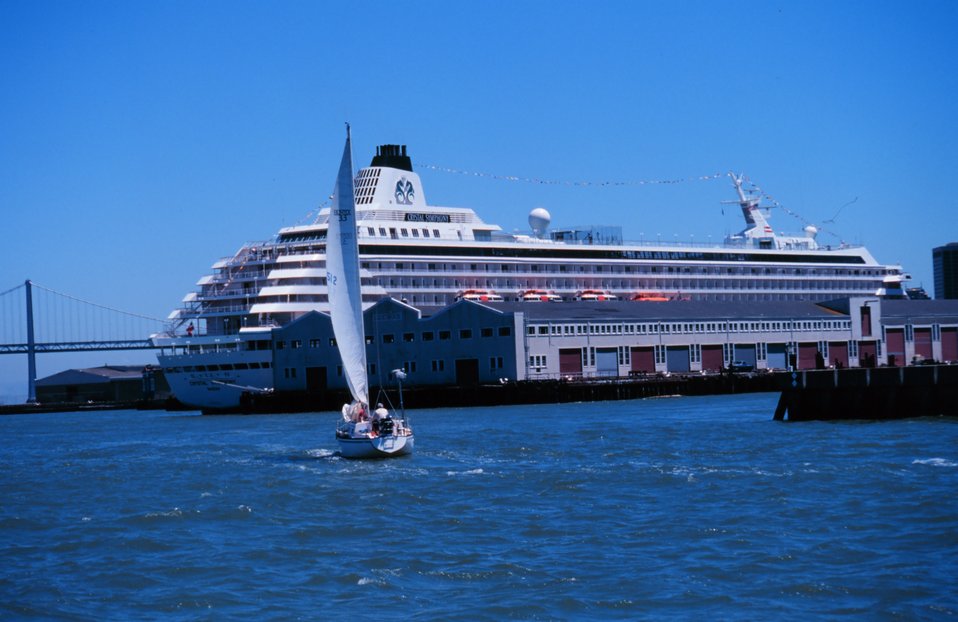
A cruise ship tied up on the San Francisco waterfront.